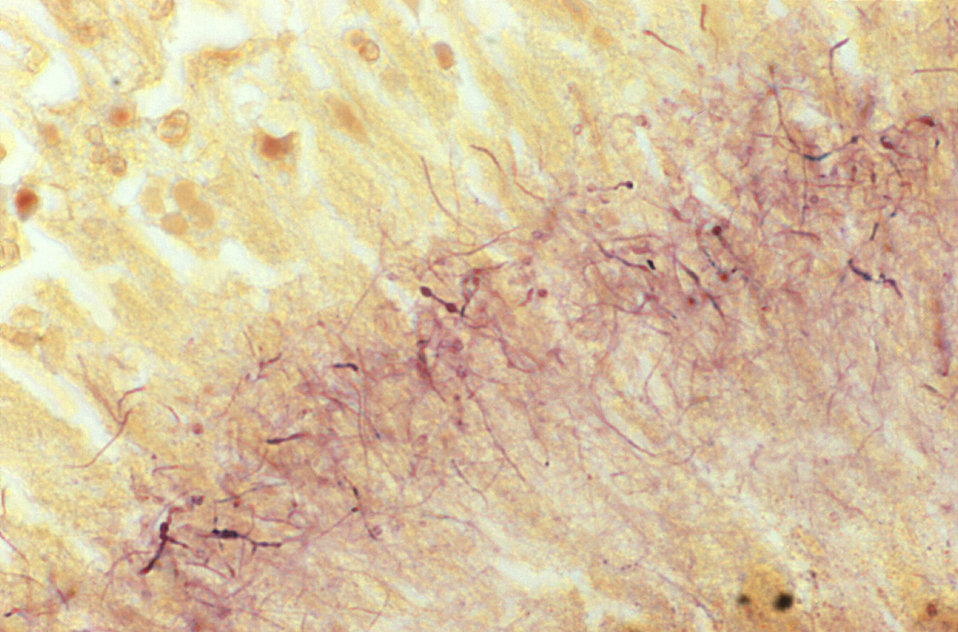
This Brown & Brenn-stained tissue specimen revealed the presence of Gram-positive Actinomadura madurae bacterial organisms.